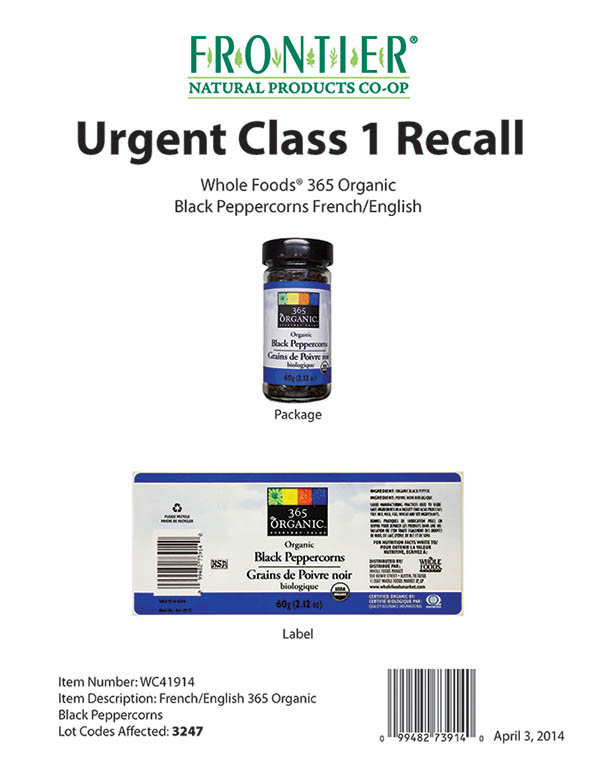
RECALLED – Organic Black Peppercorns

April 4, 2014 – Product Recall – Frontier Natural Products Co-op Initiates Voluntary Class 1 Recall Due to Possible Health Risk from Organic Black Peppercorns.